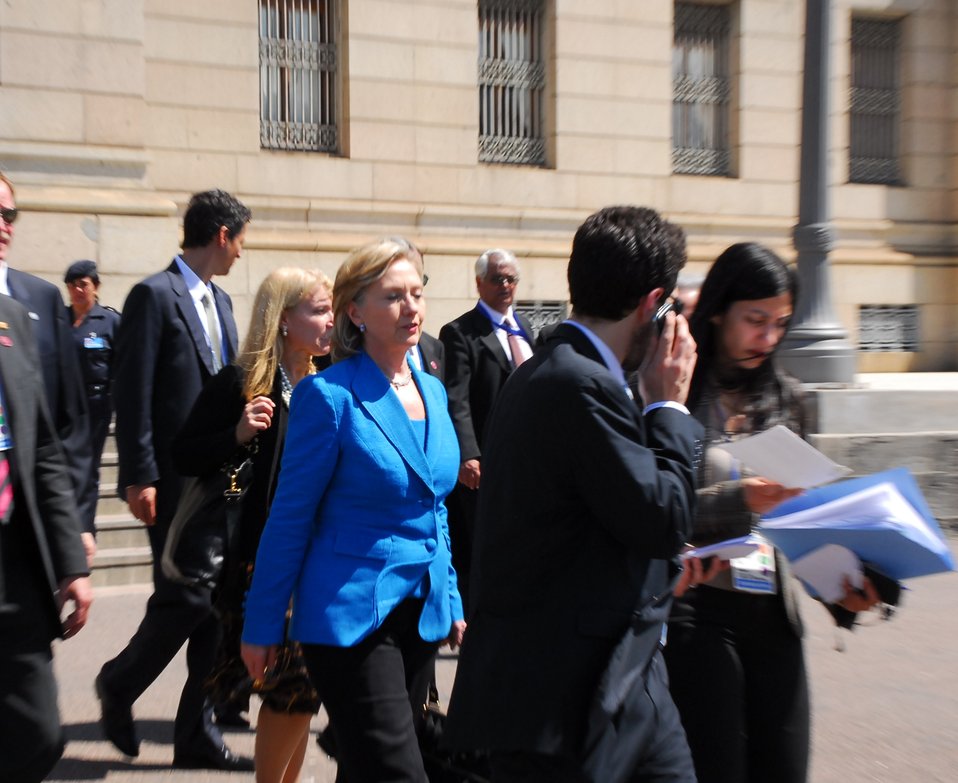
Secretary Clinton Visits Uruguay

Followed by U.S. Ambassador to Uruguay David D. Nelson, U.S. Secretary of State Hillary Rodham Clinton leaves Legislative Palace after meeting with President-elect José Mujica and with women legislators, Montevideo, Uruguay March 1, 2010.